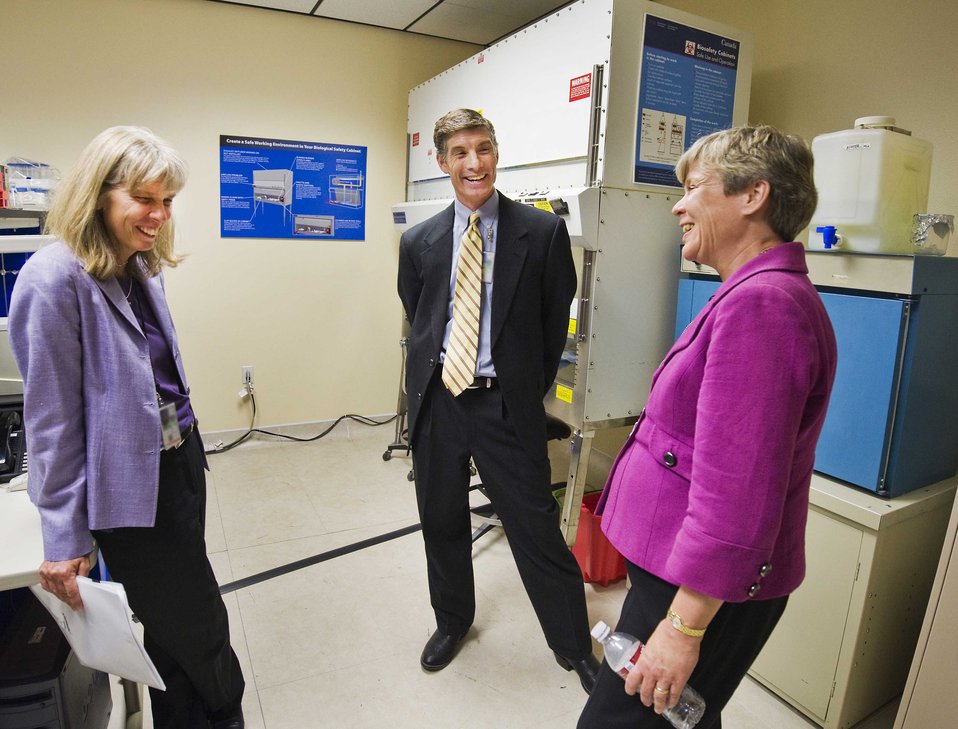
Assistant Secretary Gottemoeller Receives a Tour at the Sandia National Laboratories

Assistant Secretary of State for Arms Control, Verification and Compliance Rose Gottemoeller receives a tour at the Sandia National Laboratories in Albuquerque, New Mexico, on August 18, 2011.